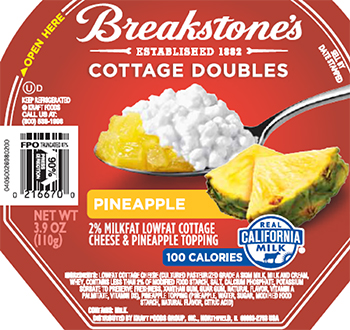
RECALLED – Cottage Cheese products

May 17, 2014 – Product Recall – Kraft Foods Group Voluntarily Recalls Select Cottage Cheese Products Due to Out-of-Standard Storage Temperatures
Certain Knudsen Cottage Cheese, Breakstone’s Cottage Cheese, Simply Kraft Cottage Cheese and Daily Chef Cottage Cheese Products Included in the Recall
.